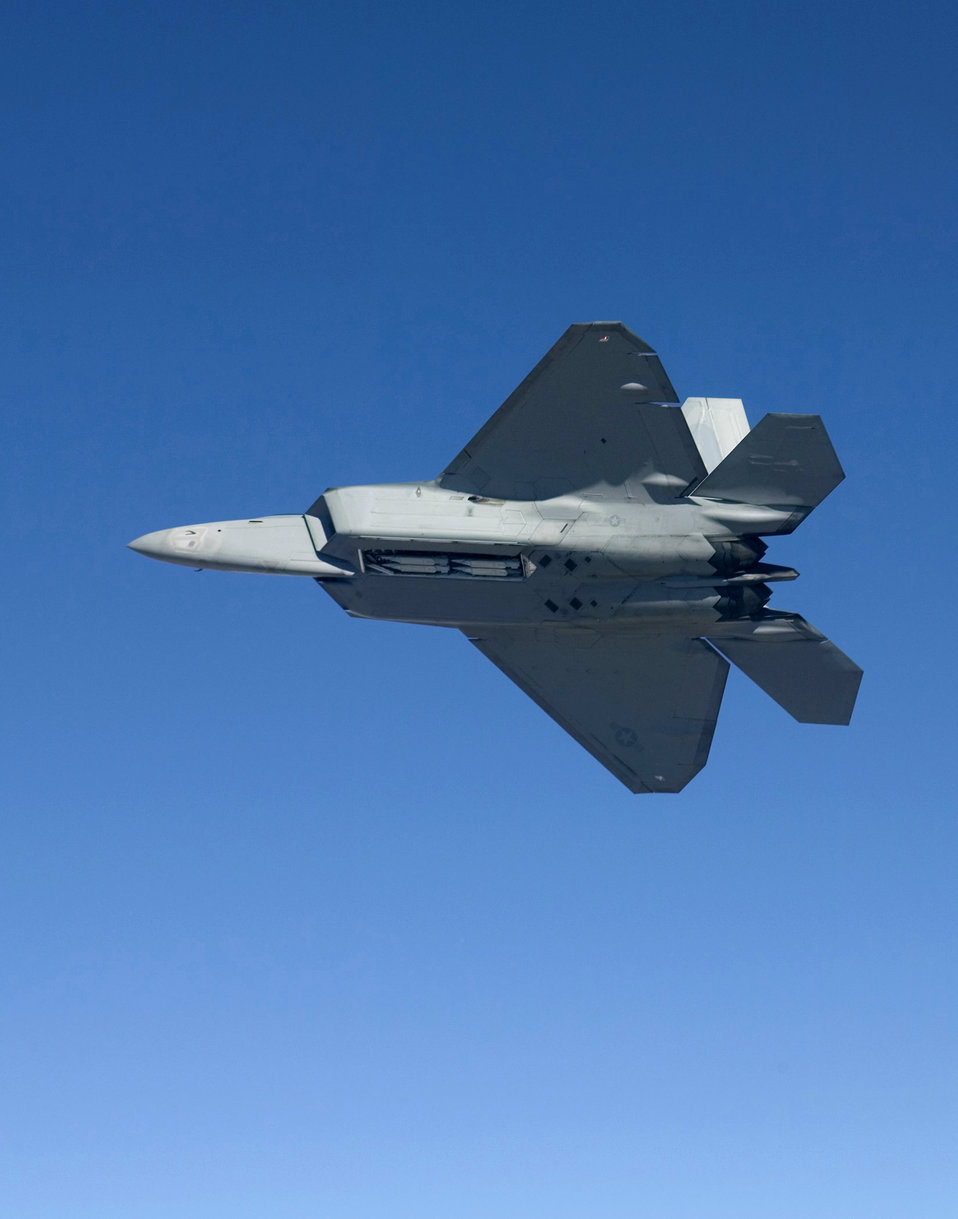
411th FTS tests F-22A Raptor, SDB integration

An F-22A Raptor flies Feb. 2, 2007, with four Small Diameter Bombs on board. Pilots and engineers from the F-22 Combined Test Force were performing load tests to ensure the GBU-39/B Small Diameter Bomb system does not exceed structural load boundaries for the Raptor.